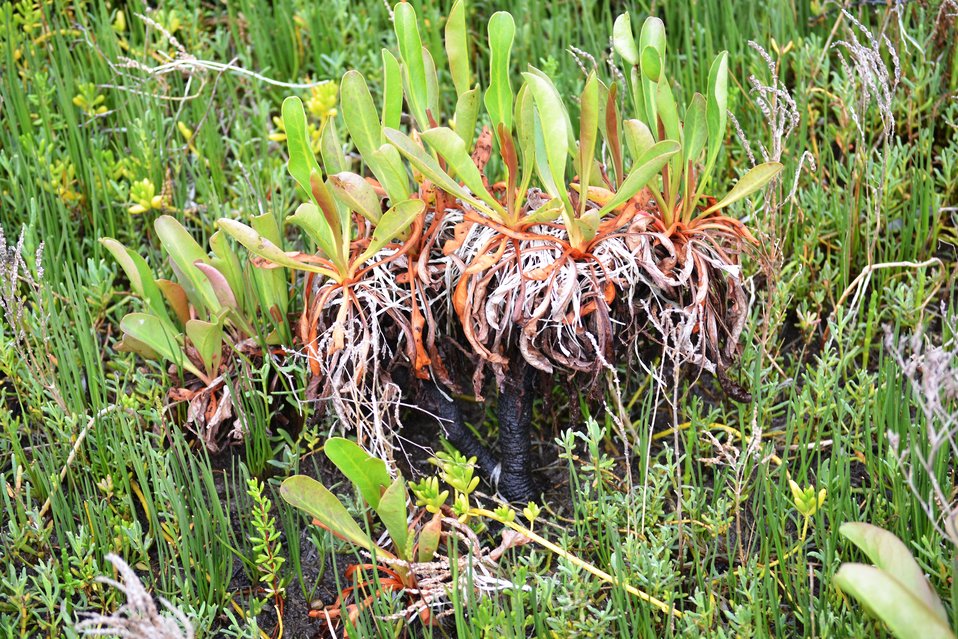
Sea lavender (Limonium californicum)

Salt marsh plants have some of the most interesting features. Here, the native sea lavender is exhibiting stalks that resemble a sort of tree